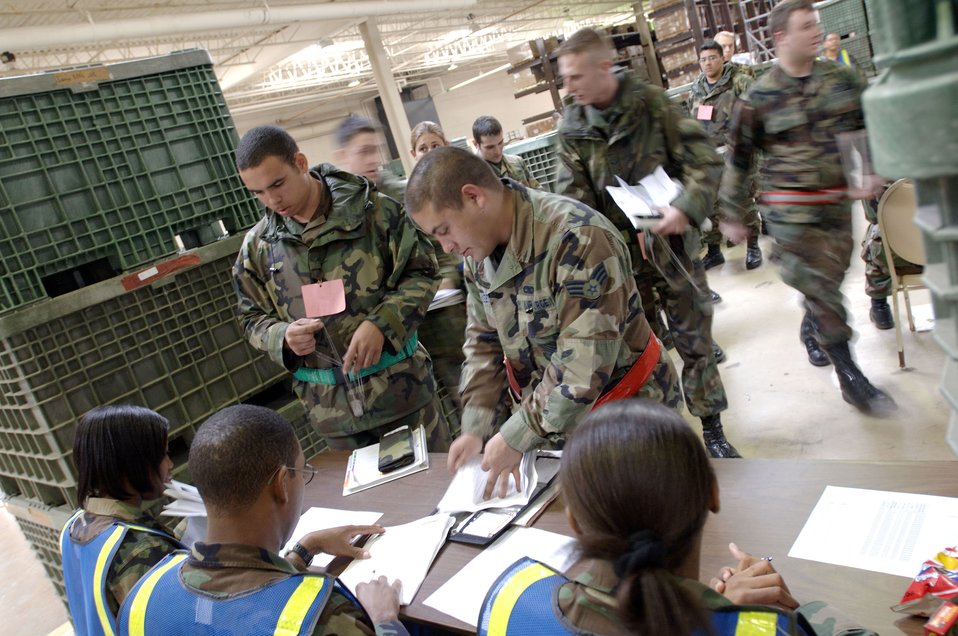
Phase 1 Operational Readiness Exercise

LANGLEY AIR FORCE BASE, Va. (AFPN) -- Airmen process through the deployment eligibility desk during a Phase 1 operational readiness exercise here Feb. 1. The Phase 1 ORE is an evaluation of the base's ability to prepare and deploy personnel, equipment and support assets to a combat environment. The inspection consists of four graded areas: initial response and deployment, employment, ability to survive and operate, and combat response.